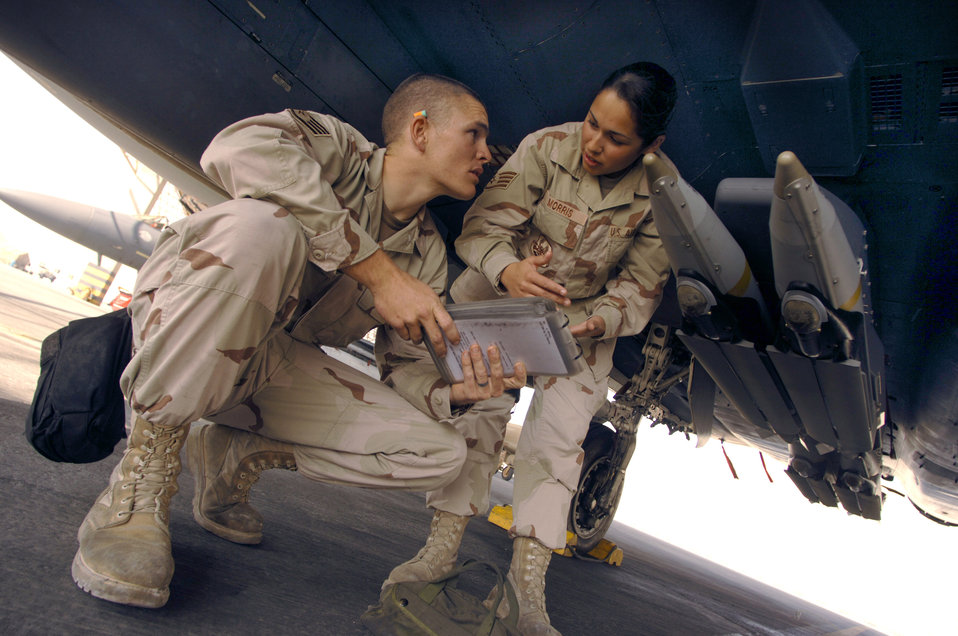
Serving through the season: Staff Sgts. Chace and Maria Morris

Staff Sergeants Chace and Maria Morris go over a technical order under an F-15E Strike Eagle Dec. 9 on the flightline at a forward-operating base in Southwest Asia. They have been married more than four years and are both deployed together supporting the war on terrorism.